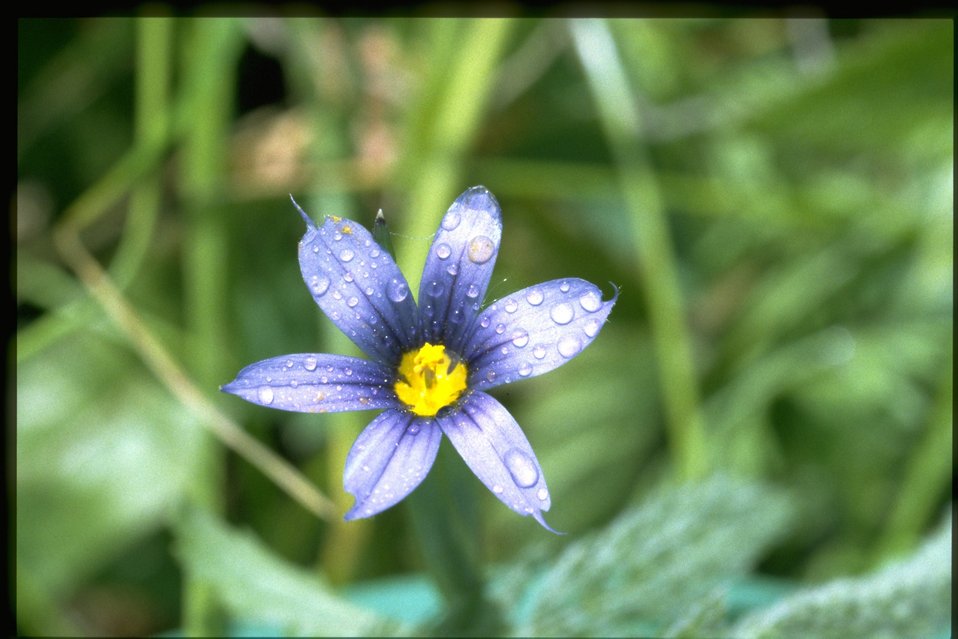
Closeup shot of Sisyrinchium idahoense.